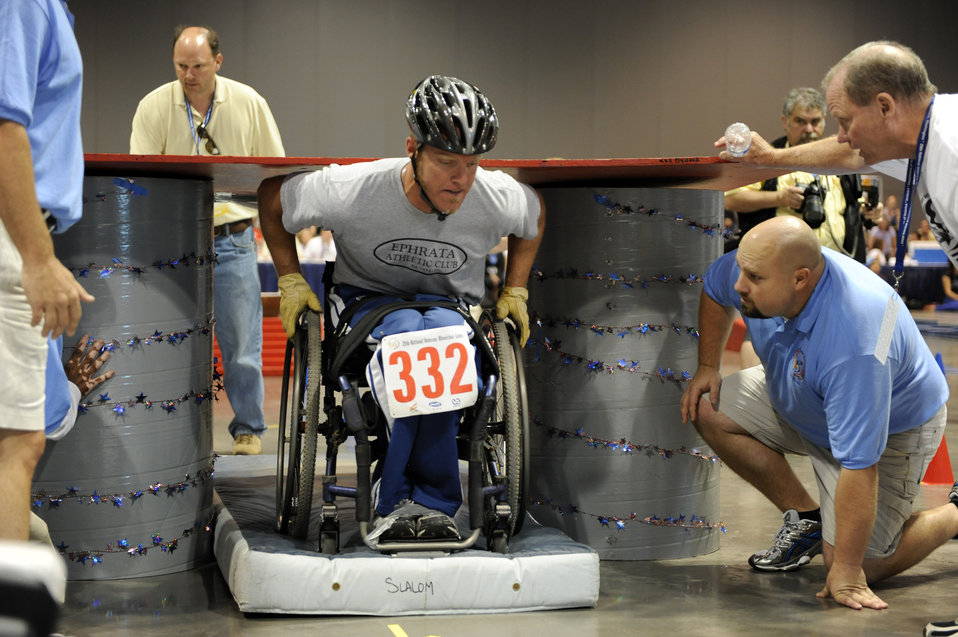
Volunteers ensure success at Veterans Wheelchair Games

Sean Halsted competes in the slalom super G competition during the 29th National Veterans Wheelchair Games July 16 in Spokane, Wash. Mr. Halsted is an Air Force veteran and resides in Rathdrum, Idaho.